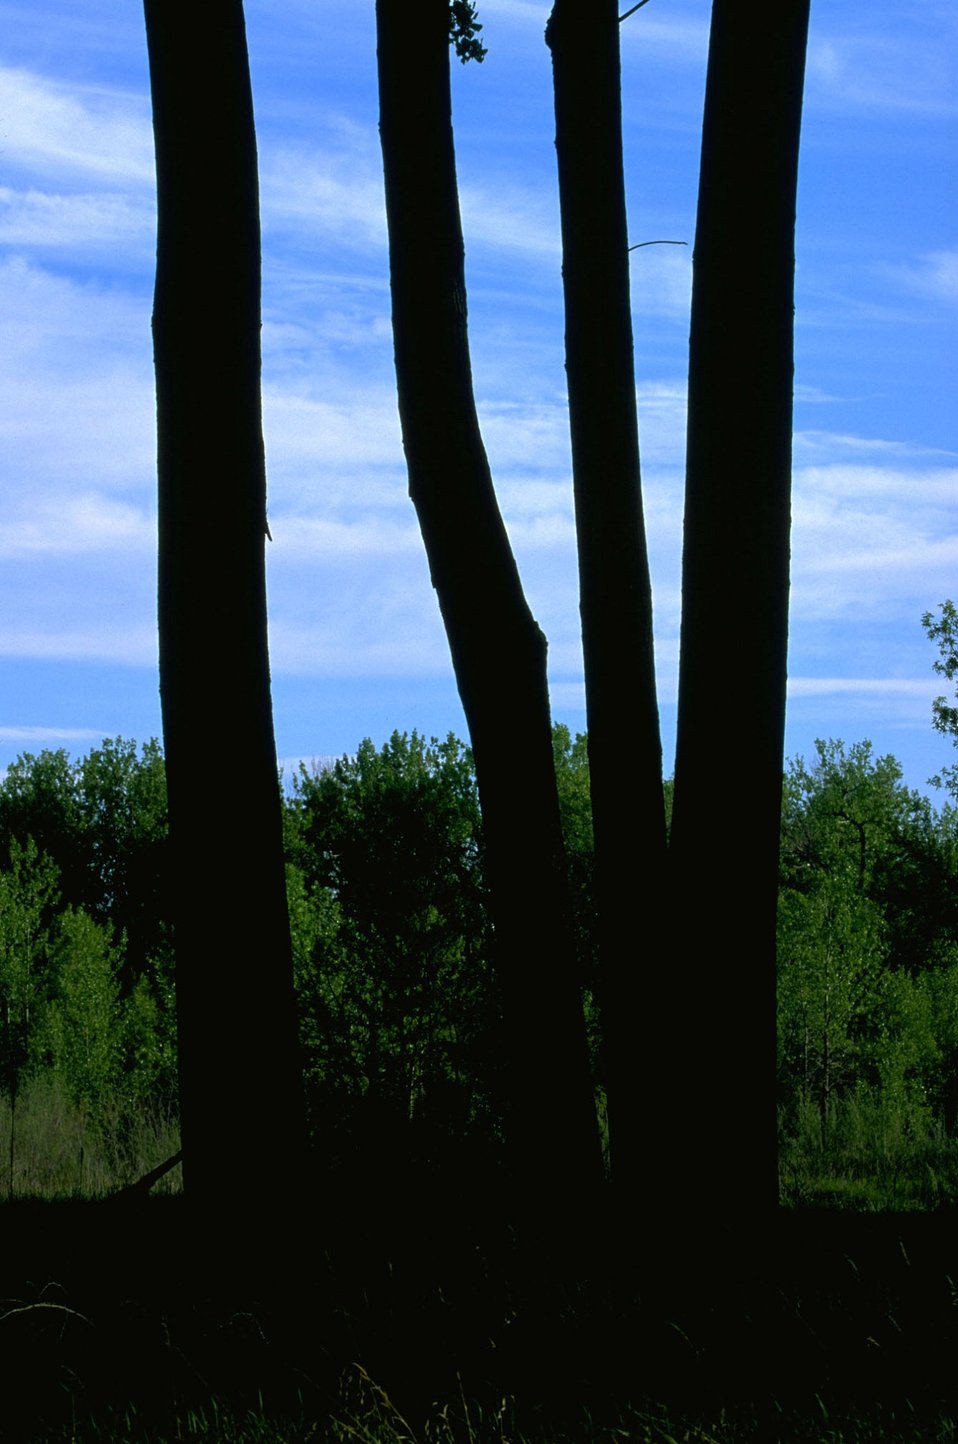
Silhouette of cottonwood tree trunks